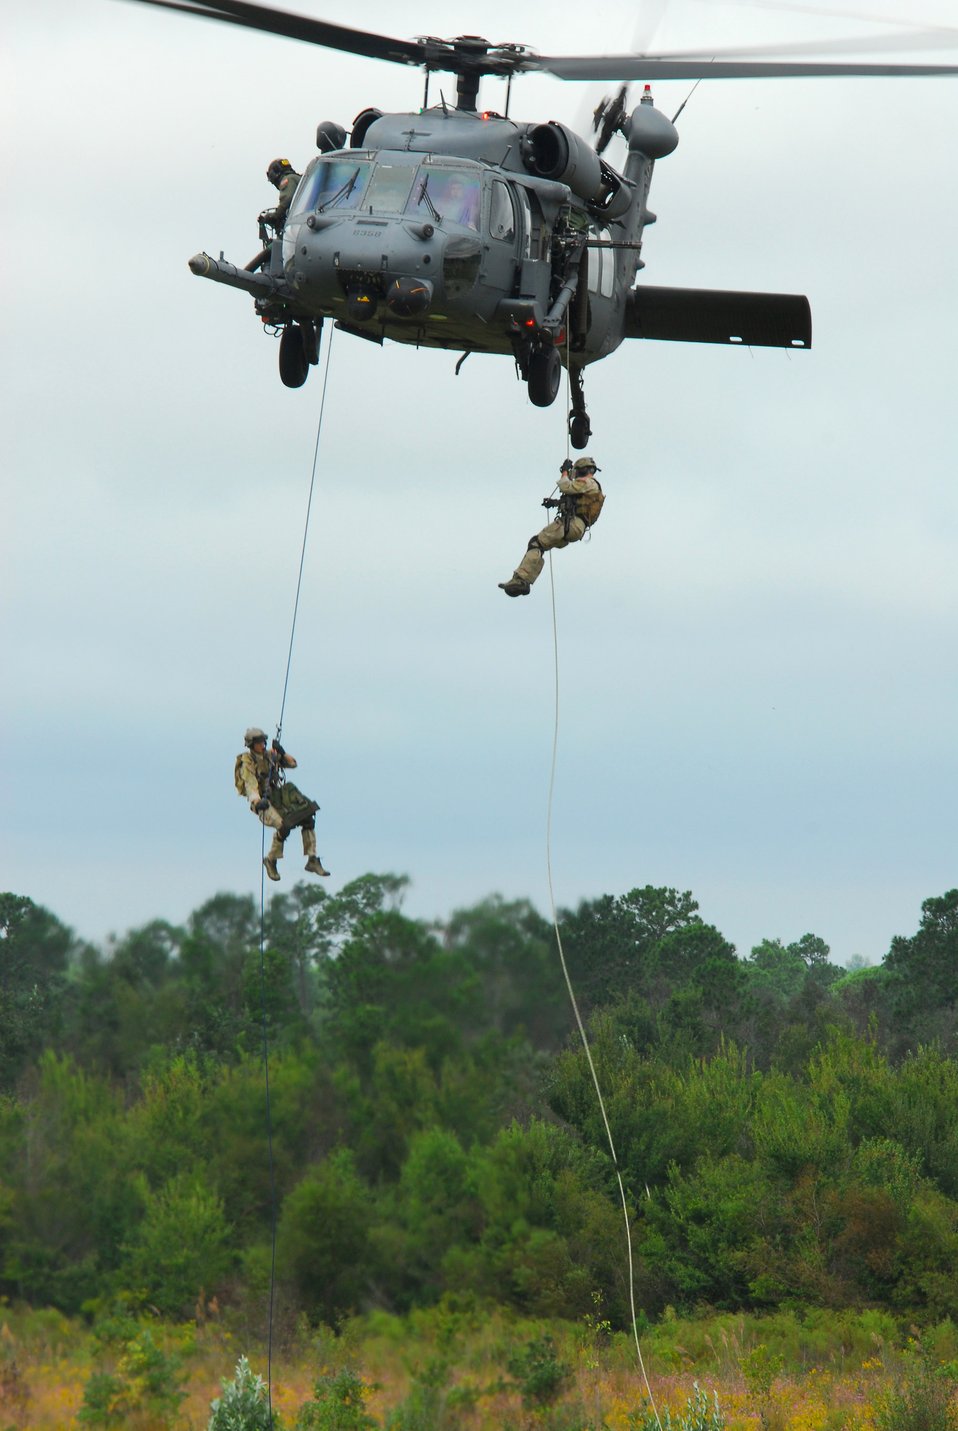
Combat search and rescue training

Two pararescuemen from the 38th Rescue Squadron rappel from an HH-60G Pave Hawk to retrieve a simulated downed aviator during a combat search and rescue demonstration at Moody Air Force Base, Ga., Oct. 4.